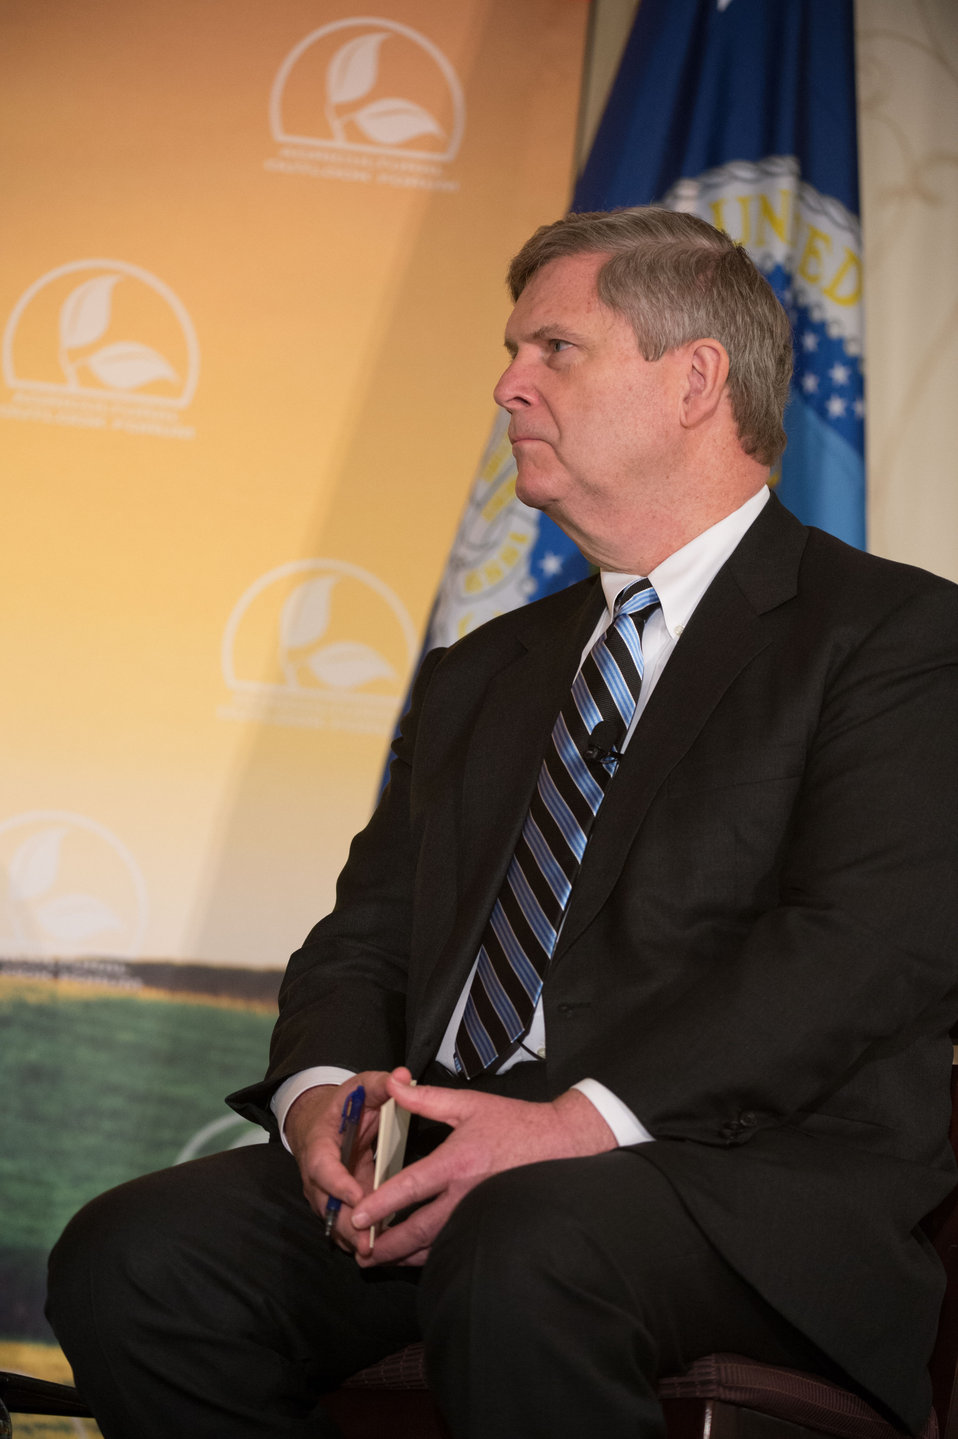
Agriculture Secretary Tom Vilsack listens to a panelist on Building Markets Here and Abroad panel at the 2014 Agricultural Outlook Forum in Arlington, VA., on Thursday, Feb. 20, 2014. The U.S. Department of Agriculture's (USDA) annual Agricultural Outlook Forum brings together the agricultural community to discuss policy, trade, science, rural development, and the economic outlook for the coming year. The Forum also focuses on forestry, health and nutrition issues, and the changing dynamics and face of rural America.USDA photo by Bob Nichols.